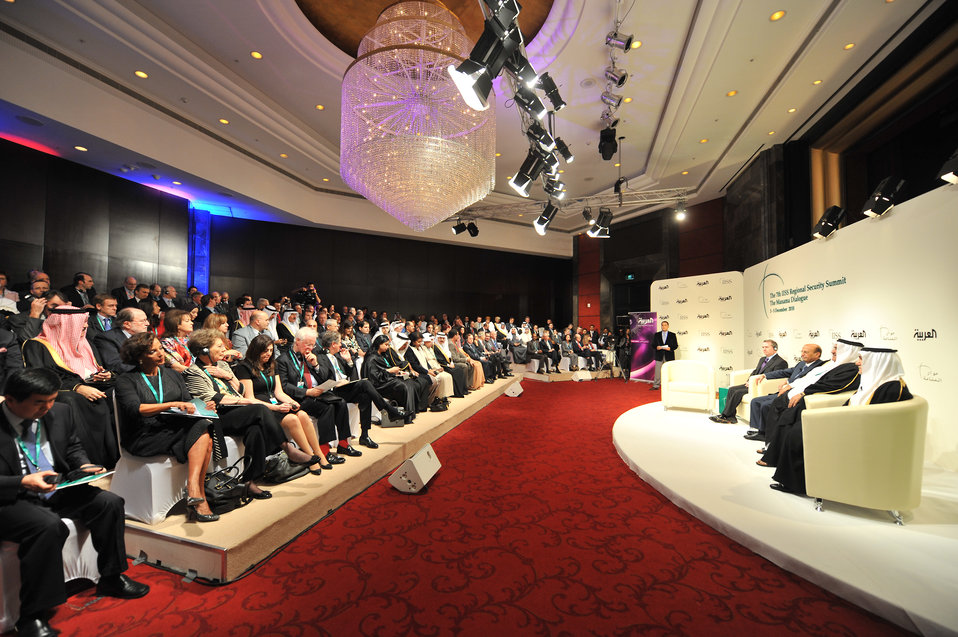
Panelists Speak at the Seventh IISS Regional Security Summit Manama Dialogue

Panelists speak during the Seventh IISS Regional Security Summit Manama Dialogue in Bahrain, December 4, 2010.